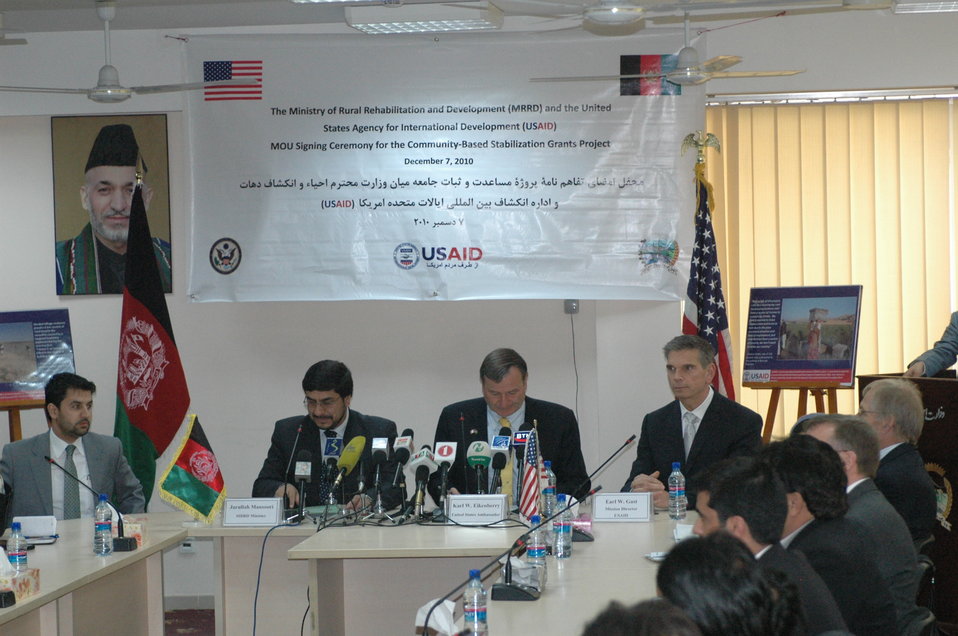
Community Based Stabilization Grants Ceremony, December 7, 2010